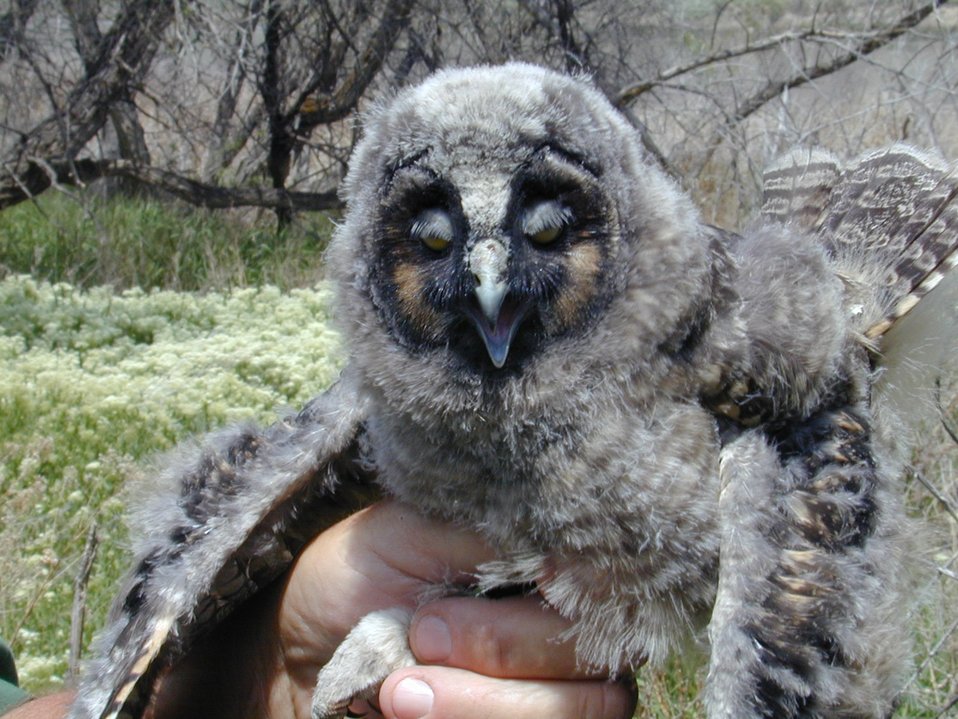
Environmental Education Fire Workshop Timberline High School Fall 2000